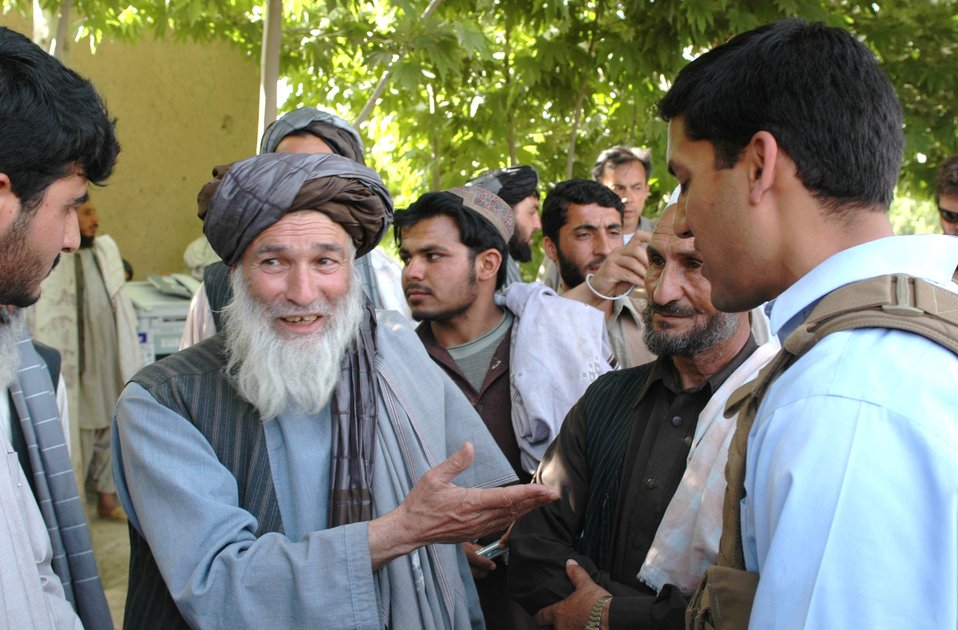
Dr Shah Visits Argandab April 10, 2010